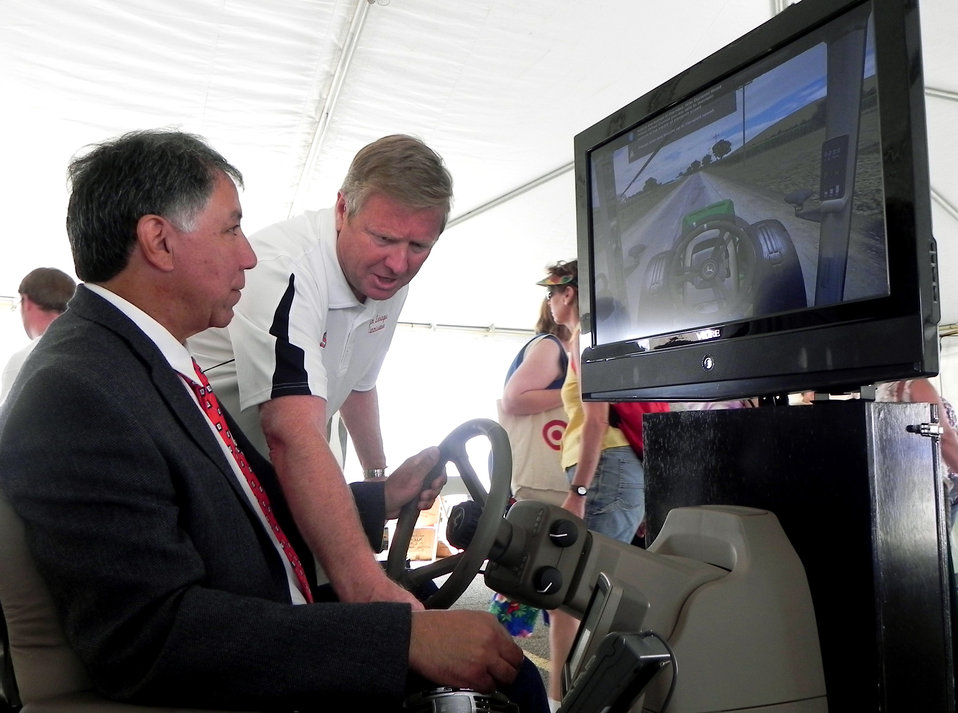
Agriculture Under Secretary for Marketing and Regulatory Programs Ed Avalos tests out a driving simulator during his visit to the Ohio State Fair in Columbus, OH on Tuesday, Aug. 2, 2011. Under Secretary Avalos attended the Ohio State Fair to host a Rural Roundtable meeting with agricultural producers and rural business leaders to explore ways federal, state and local officials can work together to improve economic conditions and create jobs. This meeting is part of a series of White House Rural Roundtables that are being held across the country this summer with senior Administration officials on behalf of the White House Rural Council.